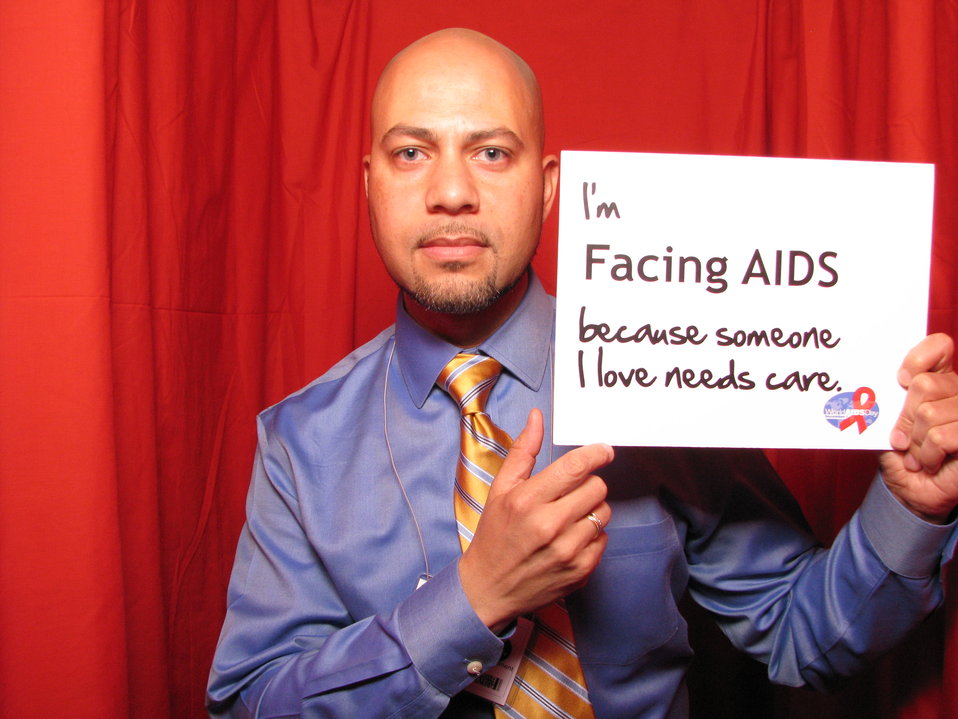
I'm FACING AIDS because someone I love needs care.

From the AIDS.gov photo booth at the U.S. Conference on AIDS, September 2010 (Orlando, FL).